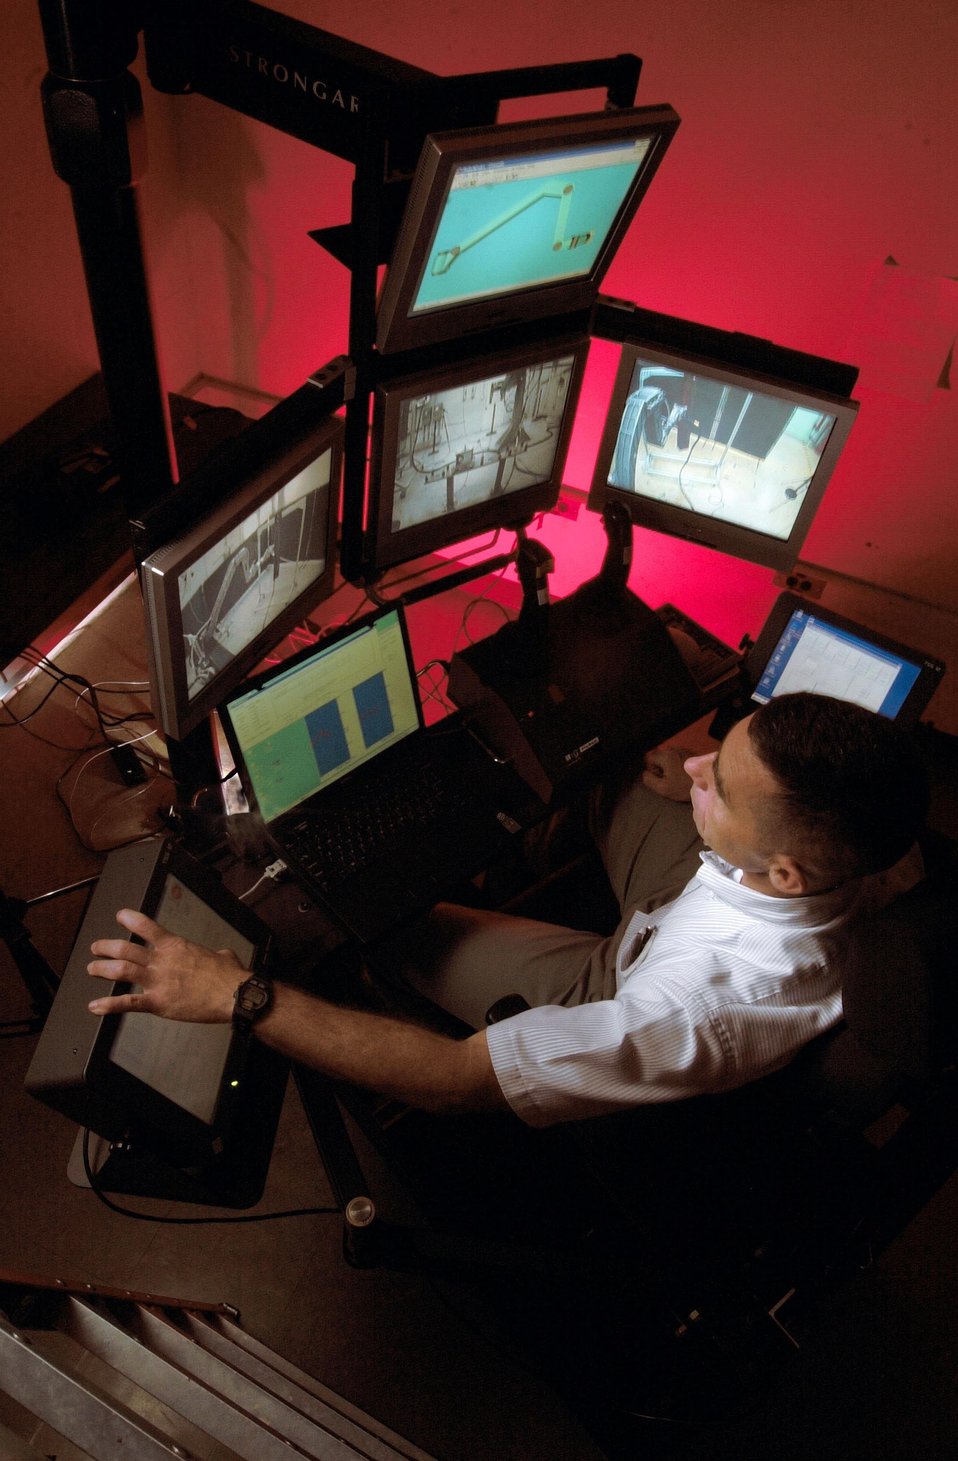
TELEROBOTIC MANIPULATION SYSTEM DEVELOPED AT ORNL FOR CLEANUP OF HAZARDOUS WASTES.

RESEARCHERS AT ORNL ARE DEVELOPING ROBOTICS TECHNOLOGY THAT ENABLES CLEANUP ACTIVITIES TO BE CONDUCTED REMOTELY THAT WOULD OTHERWISE BE DONE ON SITE BY HUMANS. THE COMPACT REMOTE CONTROL CONSOLE, WHICH IS THE FRONT END OF THE SYSTEM, PROVIDES THE OPERATOR THE ABILITY TO MANIPULATE THE TELEROBOT THAT PERFORMS THE ACTUAL CLEANUP WORK.